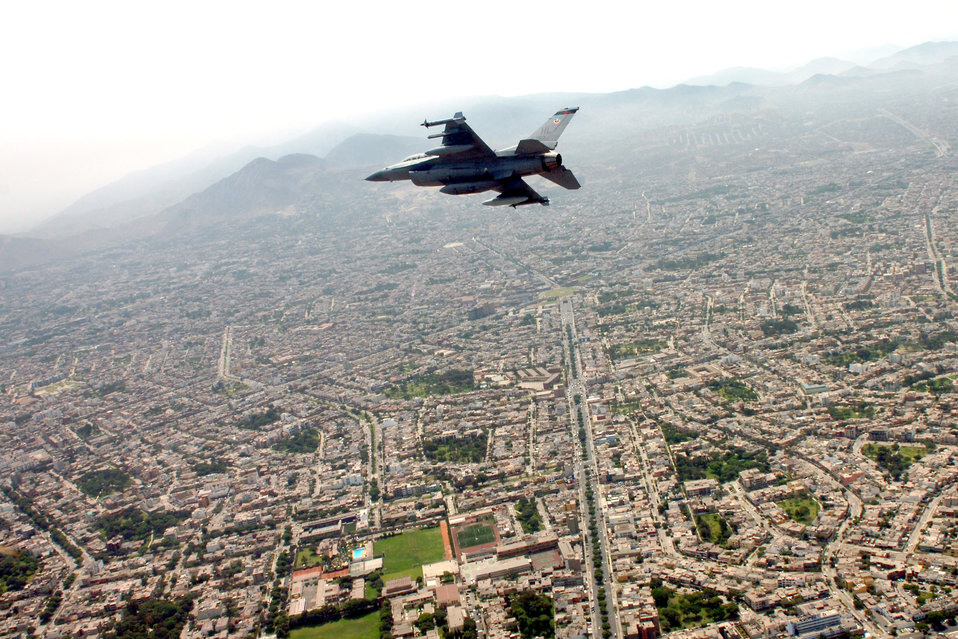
Airmen work alongside Peruvian military during joint exercise

An F-16 Fighting Falcon Utah flies over Lima, Peru, on its way to the city for a joint air show with the Peruvian Air Force. The Peruvian air show will be the first of the year for aircraft from the 12th Air Force and Air Forces Southern. The F-16 is from the 34th Fighter Squadron at Hill Air Force Base, Utah.